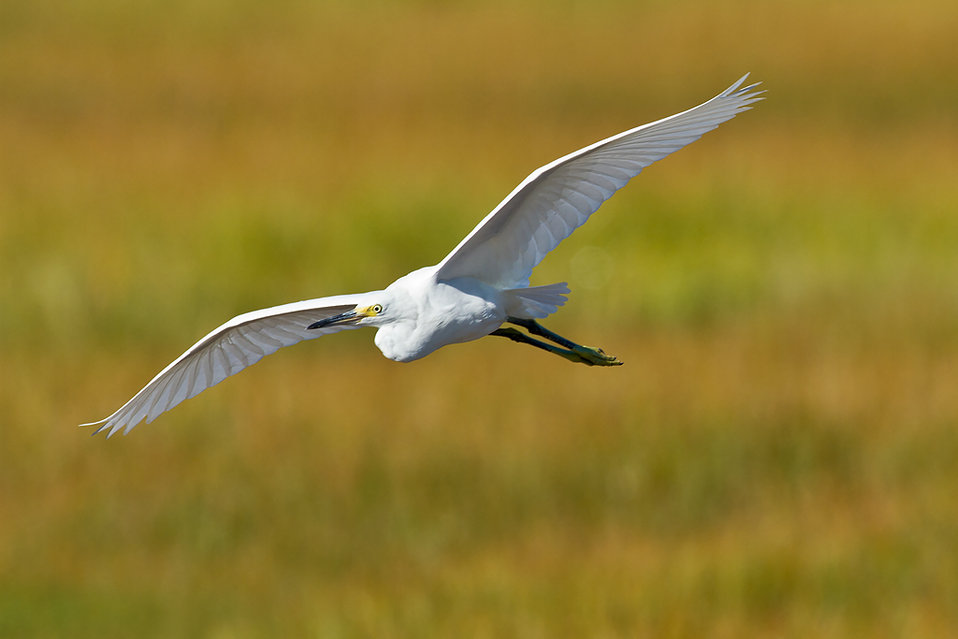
Egret soaring over Rachel Carson National Wildlife Refuge

Credit: Steve Norris/USFWS Volunteer

www.fws.gov/refuge/rachel carson/